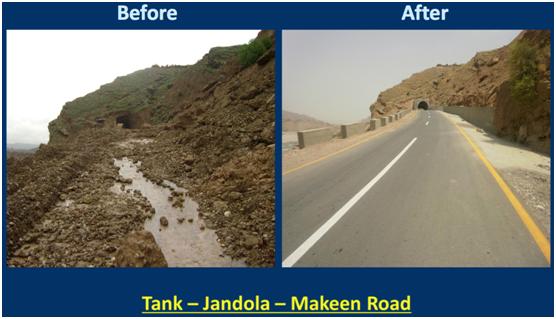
Tank- Jandola- Makeen road.

Before and After of Tank- Jandola- Makeen road.